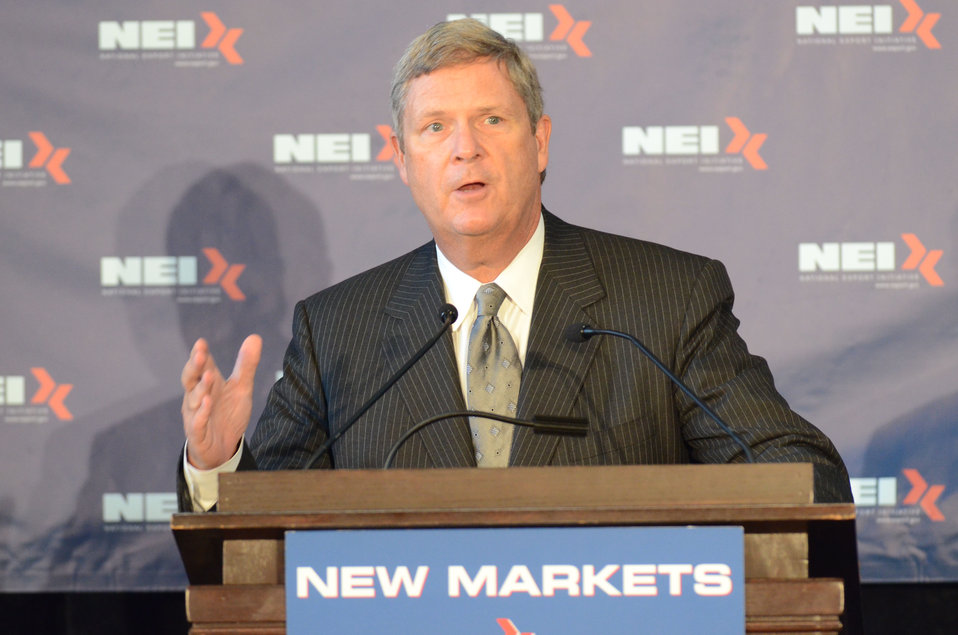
Agriculture Secretary Tom Vilsack speaks at the National Export Initiative (NEI) Small Business Tour in Milwaukee, WI, on Wednesday, August 3, 2011. An important goal of the NEI is to provide additional assistance to small and medium-sized businesses, which are major drivers of job creation. The NEI is assisting small and medium-sized businesses win more foreign government contracts, find buyers worldwide, participate in more trade missions and trade shows, receive more export financing, and learn new ways to sell products and services overseas.